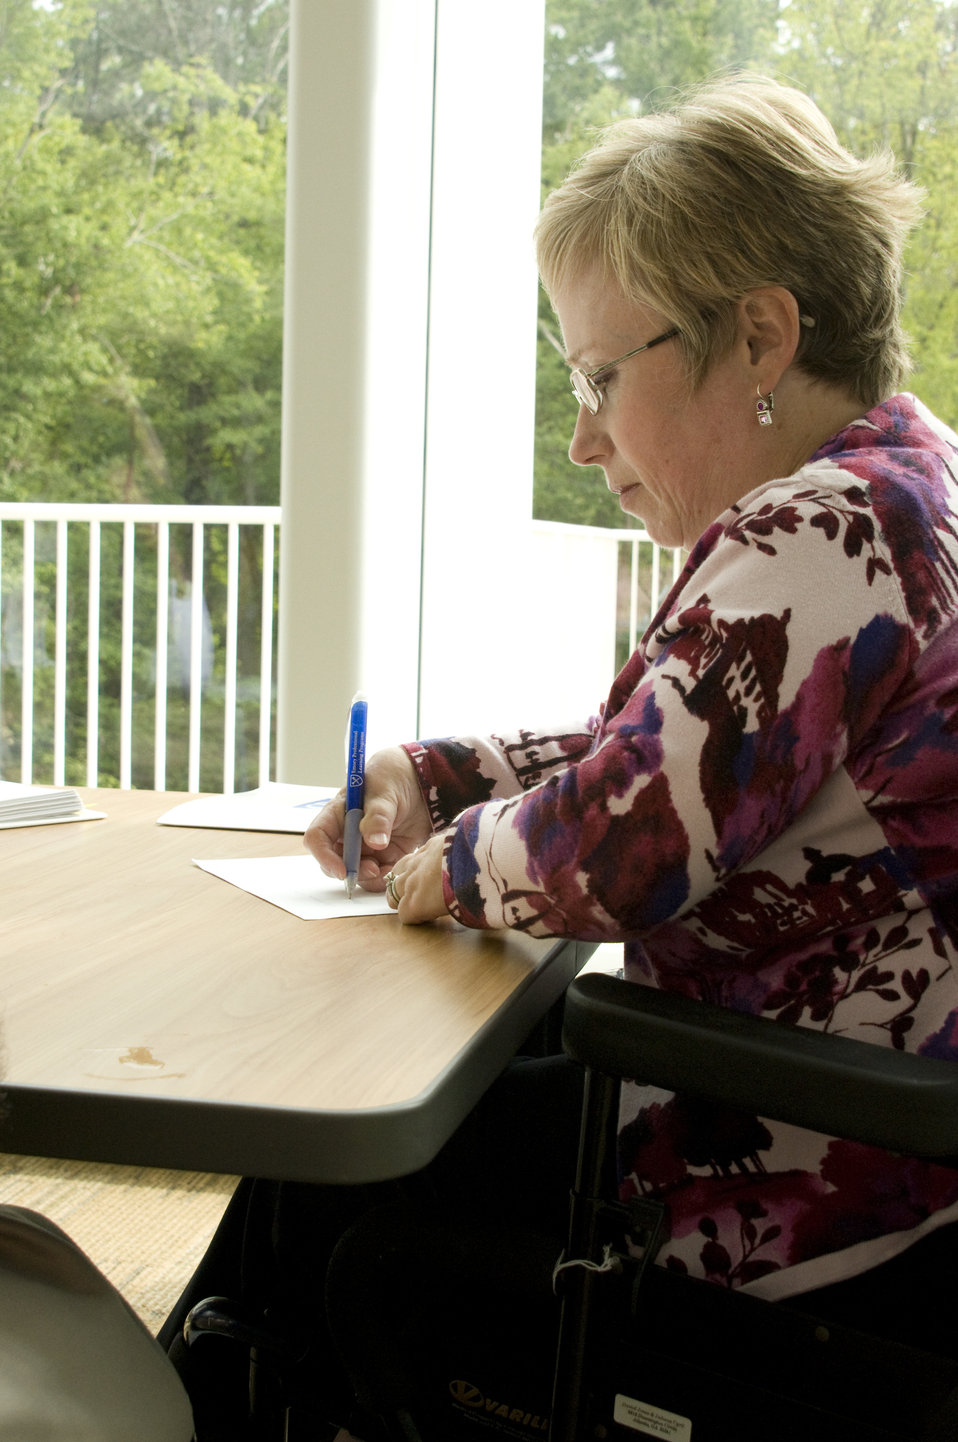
This image depicts a woman seated in her wheelchair at a desk, which was located in a Centers for Disease Control (CDC) Atlanta, Georgia campus building. She was there to attend a meeting, and was shown here filling out some meeting-related paperwork. Though disabled, she'd obviously overcome her disabilities, and was carrying out her daily activities with the need of little assistance. What was important, was the highly-accessible environment, which is an organization-wide goal, and which included access to all campus facilities.